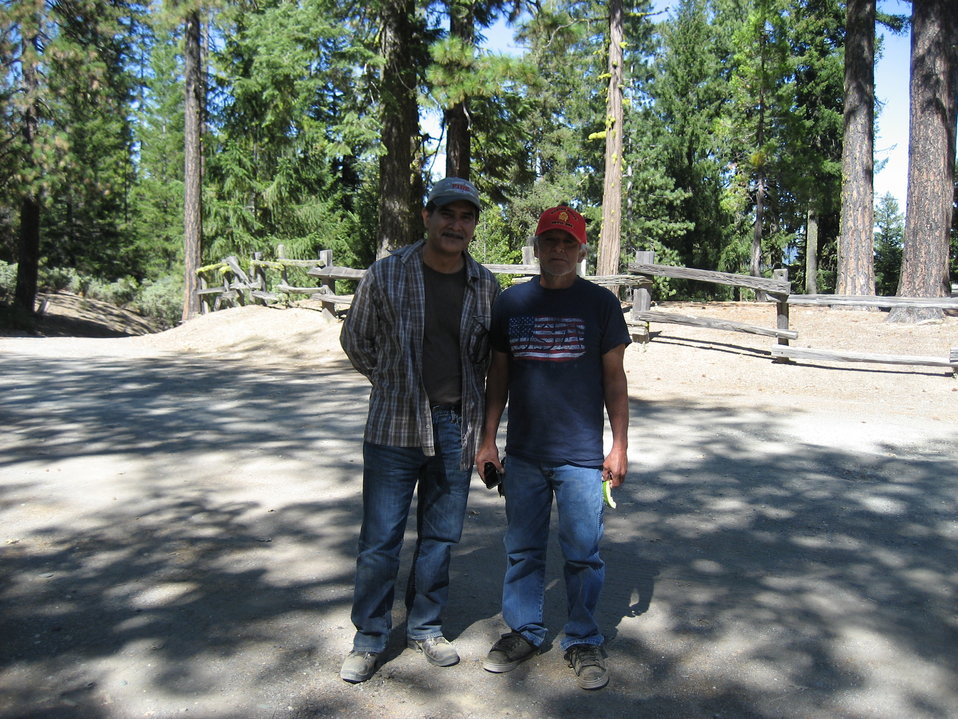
nomecult2

U.S. Forest Service Grindstone District Ranger Eduardo Olmedo and Round Valley Indian Tribes President Kenneth Wright enjoy the shade after a morning of hiking the Nome Cult trail on the Mendocino National Forest in northwestern California.